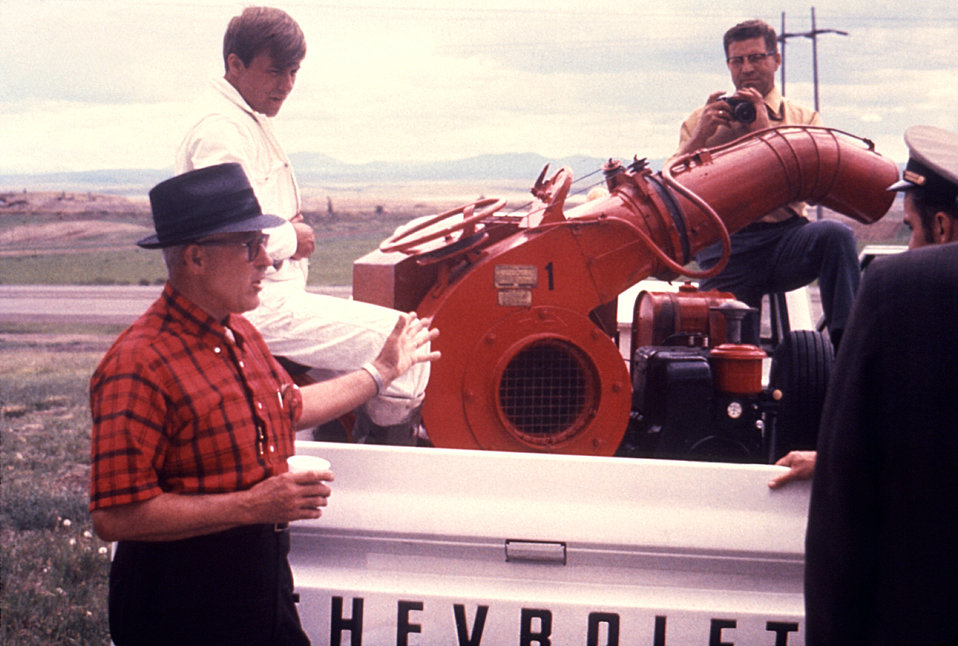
This 1981 photograph depicts a number of field technicians participating in a Rotomist demonstration.